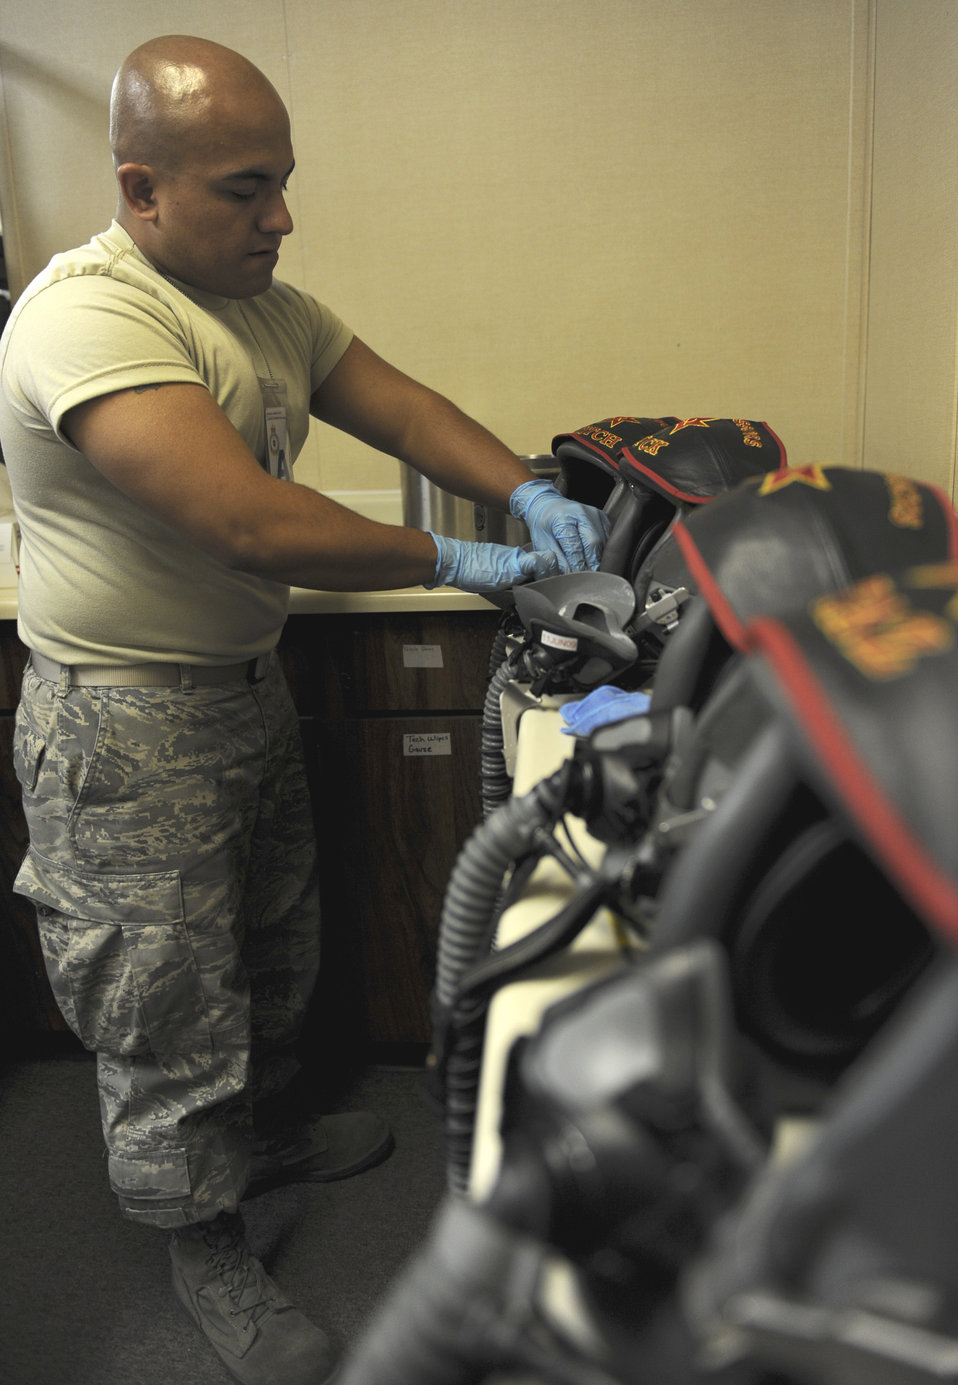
Maple Flag 42

Staff Sgt. Daniel Ruiz, an aircrew flight equipment journeyman assigned to the 57th Wing, Nellis Air Force Base, Nev., conducts a post-flight cleaning of equipment during exercise Maple Flag 42 at 4 Wing Cold Lake, Canada, June 8. Maple Flag is a Canadian-sponsored and Air Combat Command supported exercise that provides aircrews simulated air and ground combat training to coalition forces in a NATO environment.